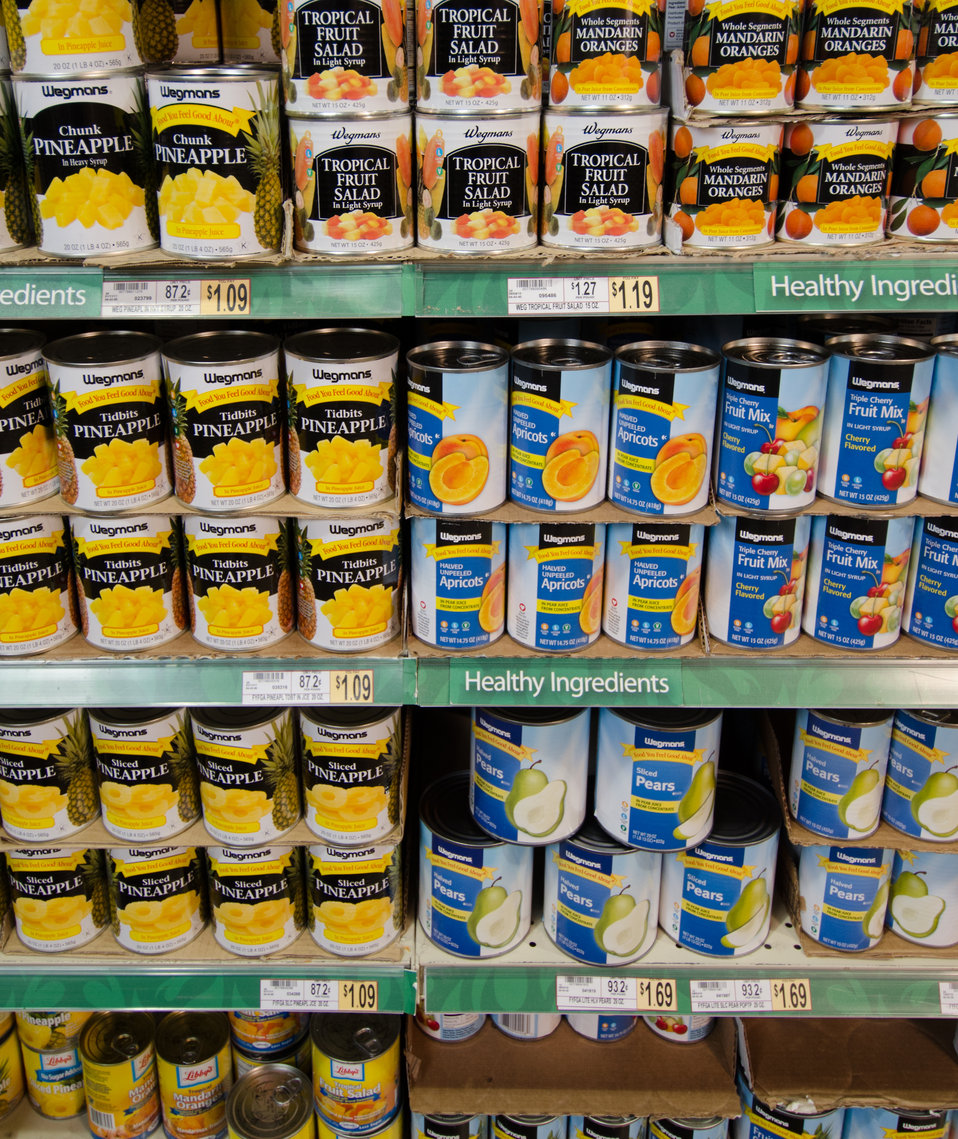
Canned goods at a grocery store in Fairfax, Virginia, on March 3, 2011.